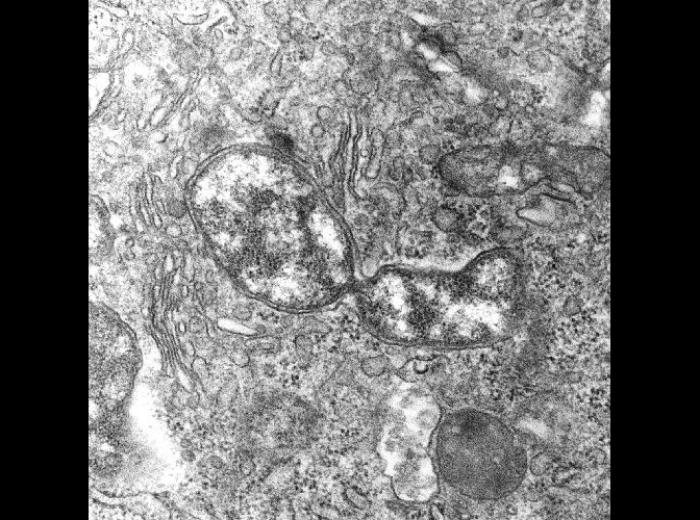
Rickettsia tsutsugamushi dividing within the cytoplasm of a mouse peritoneal mesothelial cell.